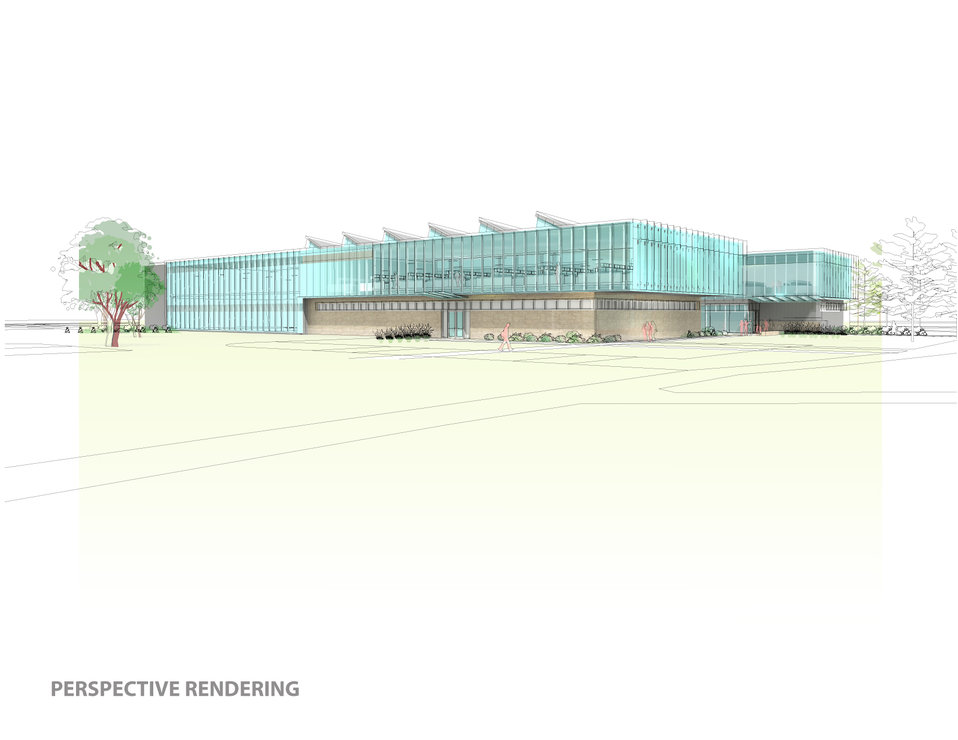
Recovery Act Grant; Purdue University

Planned Center for High Performance Buildings at Purdue University.